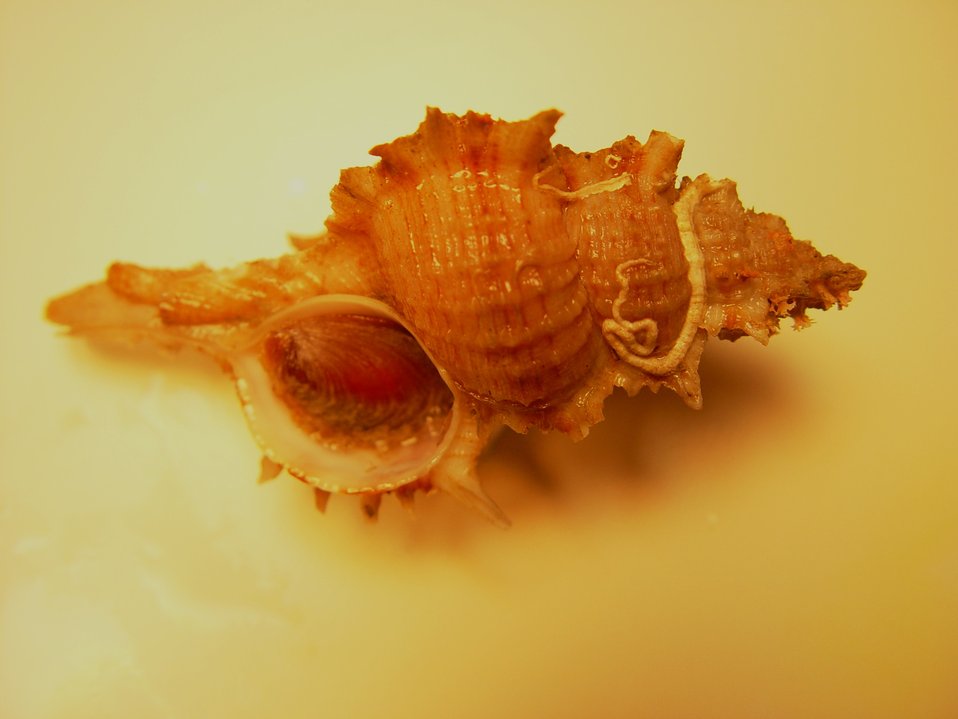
Beau's murex ( Chicoreus beauii , synonym Siratus beauii )